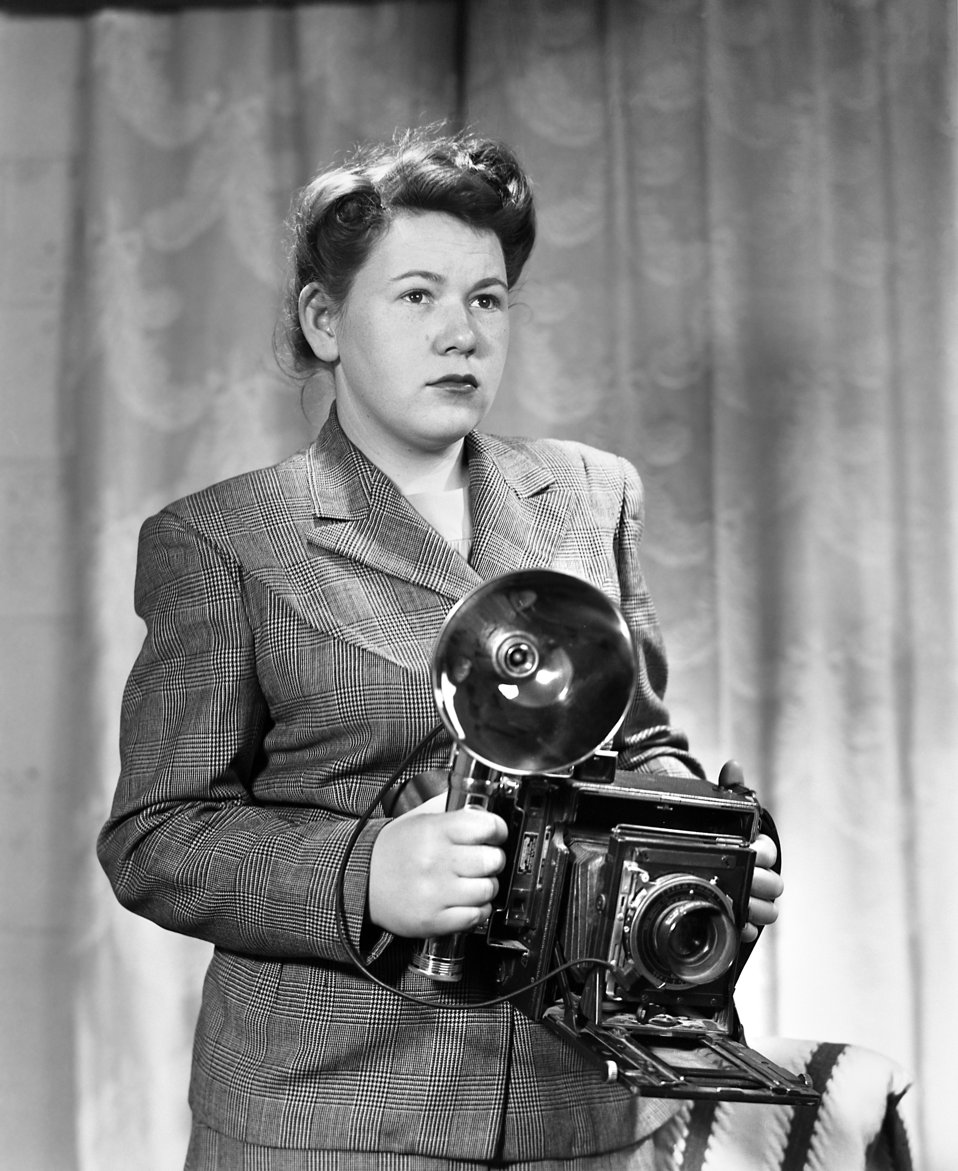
Helen Bean with 4x5 Press Camera Oak Ridge 1947

3314-5 DOE photo Ed Westcott 2-24-1947 Oak Ridge Tennessee